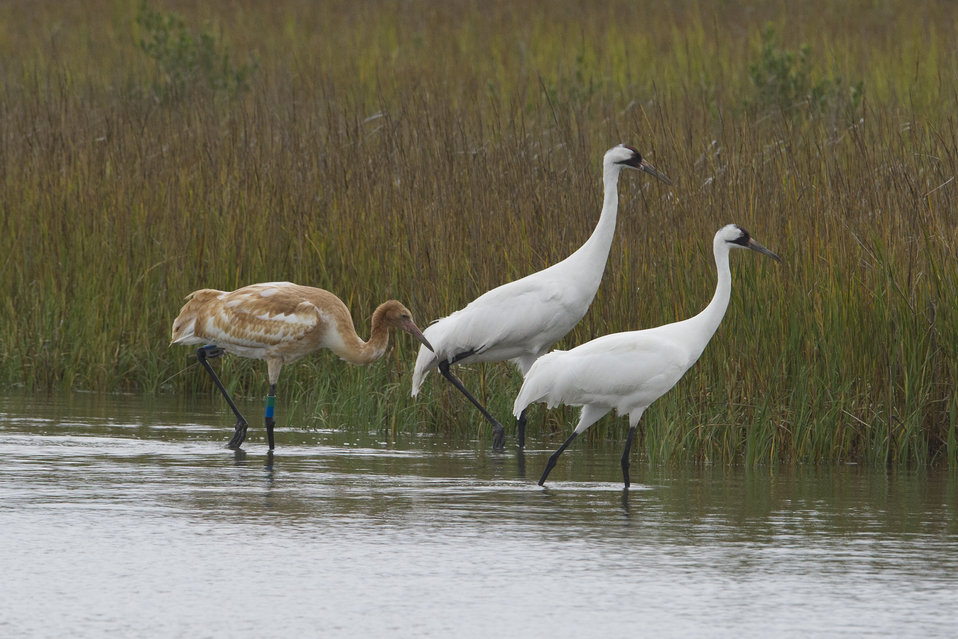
Whooping Cranes in marsh in Texas.